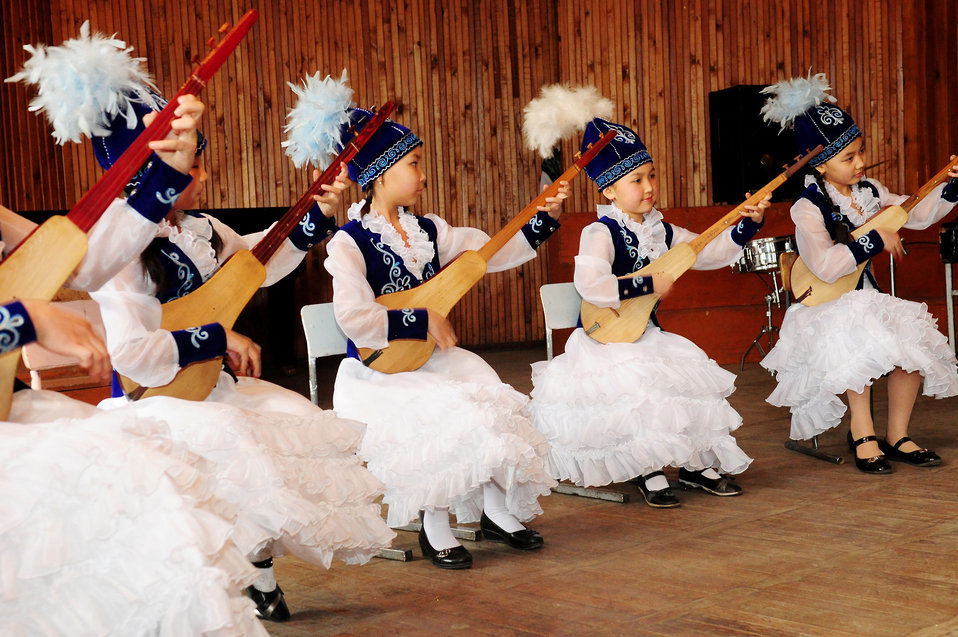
Cheers to Bishkek

Kyrgyz students plays the Komuz, a local traditional instrument, for the Washington Redskins Cheerleaders at the Abdraev Musical Boarding School Jan. 27, 2010, in Bishkek, Kyrgyzstan.